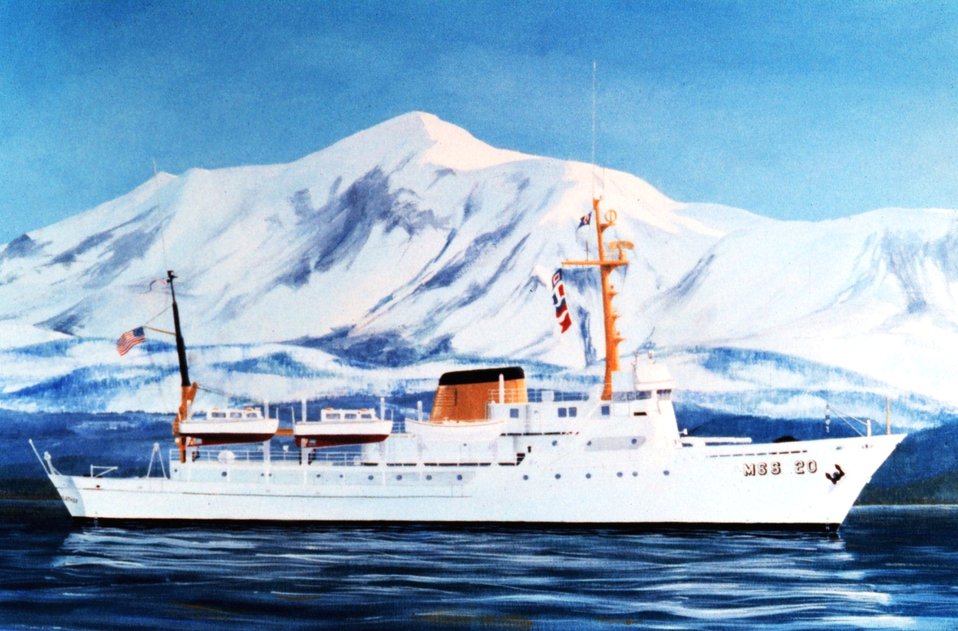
Artist's conception of the NOAA Ship FAIRWEATHER.